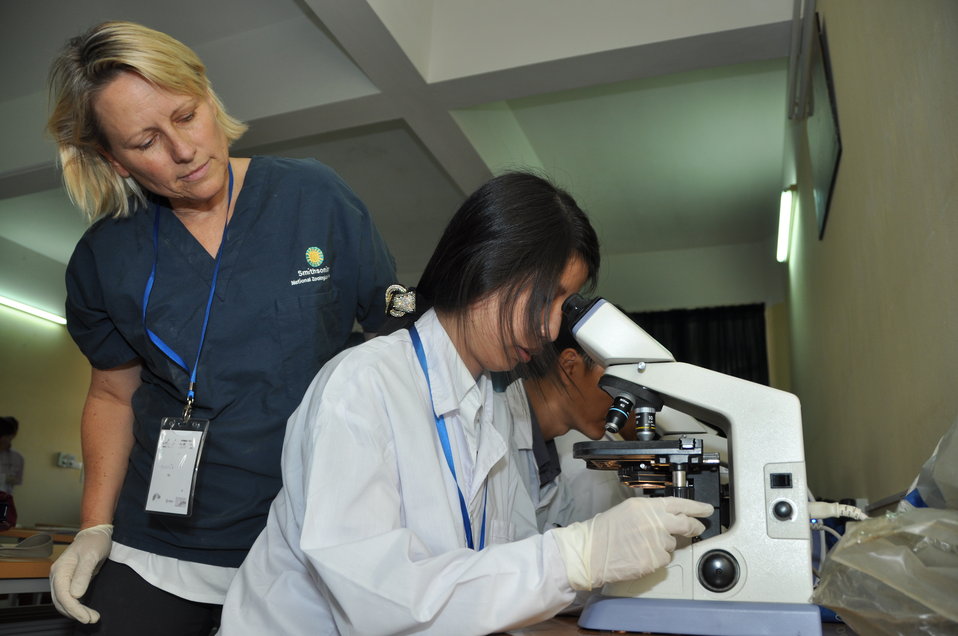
USAID EPT Smithsonian Pathology Training to Detect Emerging Infectious Diseases Wildlife and Other Animals in Vietnam Workshop